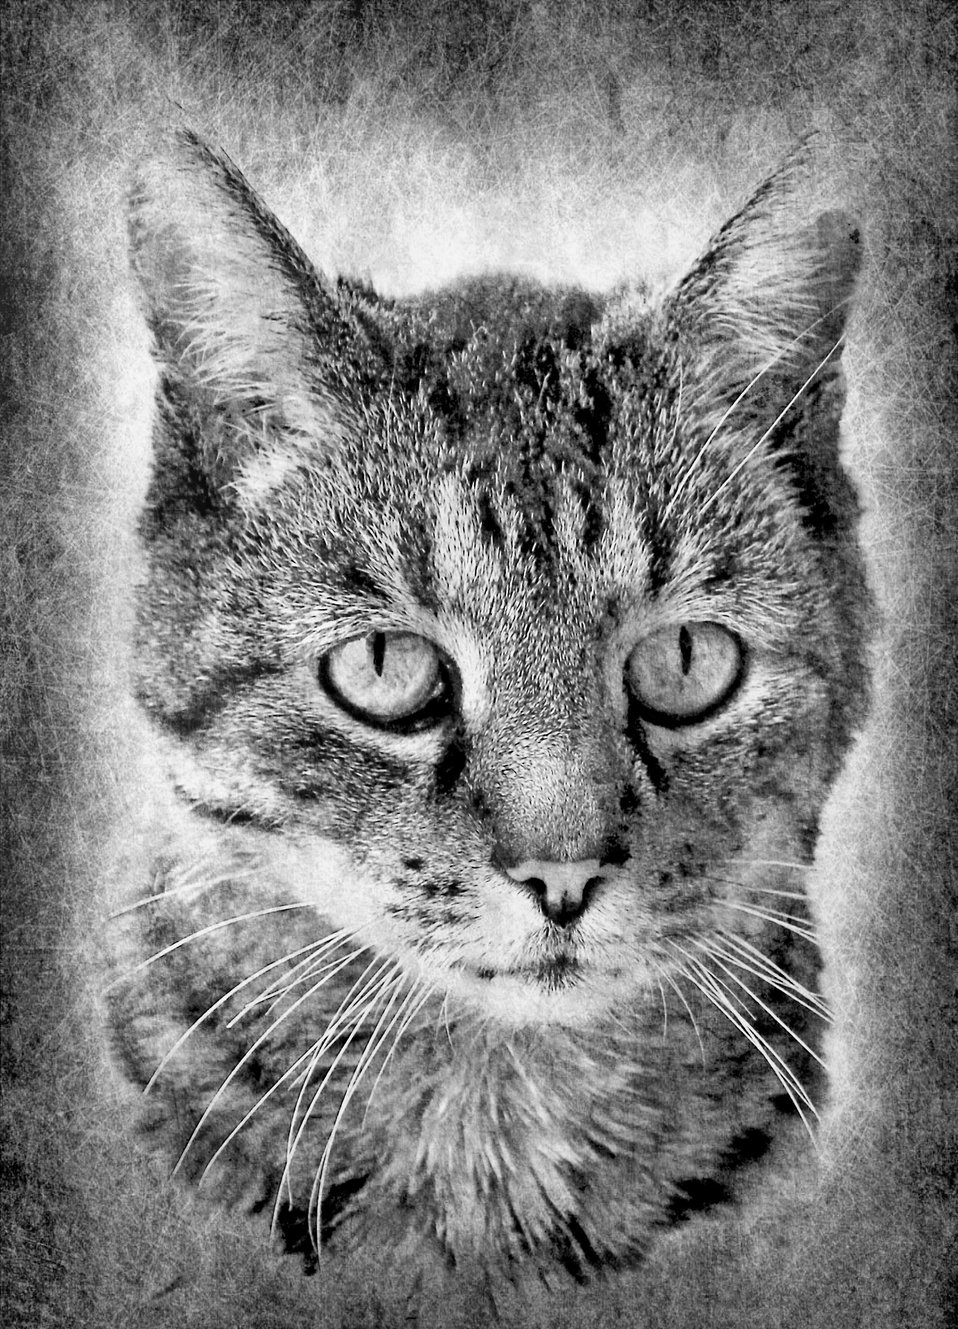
Charlie

The cat of our neighbors.